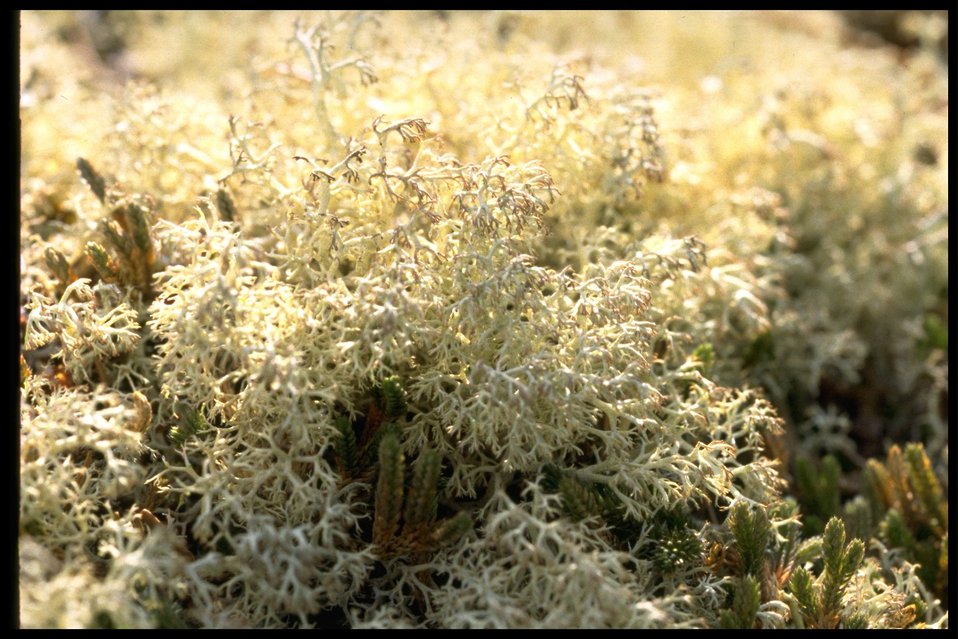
Close up of Lichen at Point Colville.